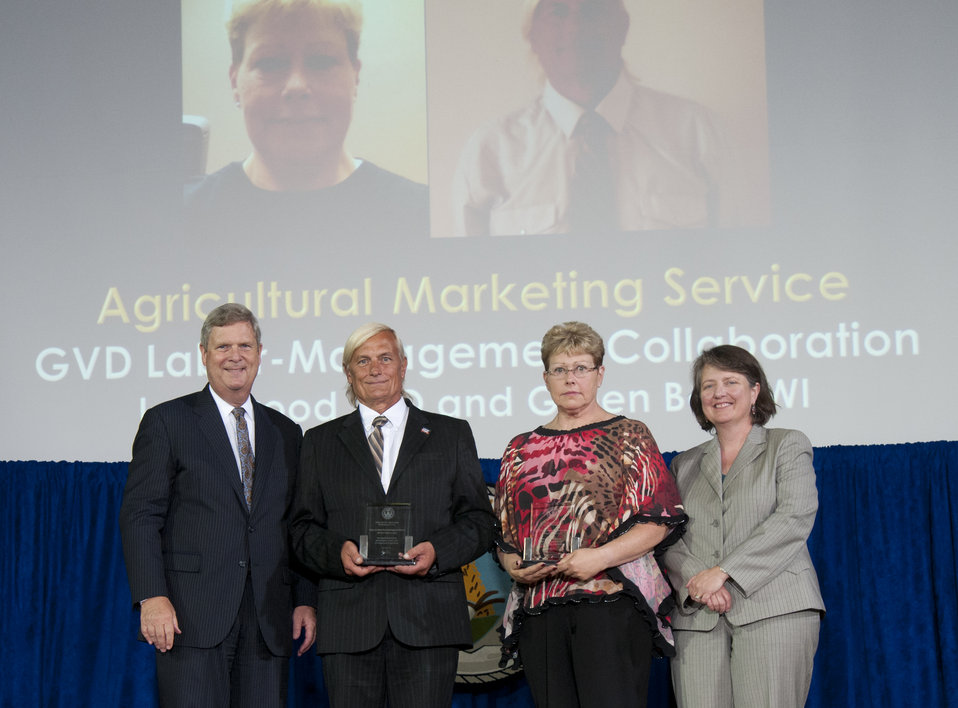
Agriculture Secretary Tom Vilsack and Agriculture Deputy Secretary Kathleen Merrigan present the Secretary’s Honor Award to Grading and Verification Division Labor-Management Collaboration Team Agricultural Marketing Service (AMS) group leaders Stephen J. Cave and Katherine A. Klass at the U.S. Department of Agriculture (USDA) 64th Annual Honor Awards Ceremony in Washington, D.C. on Wednesday, Sept. 12, 2012. The Grading and Verification Division Labor-Management Collaboration Team crafted a new Collective Bargaining Agreement that promotes increased quality and productivity, customer service, mission accomplishment, efficiency, quality of work life, and organizational performance.